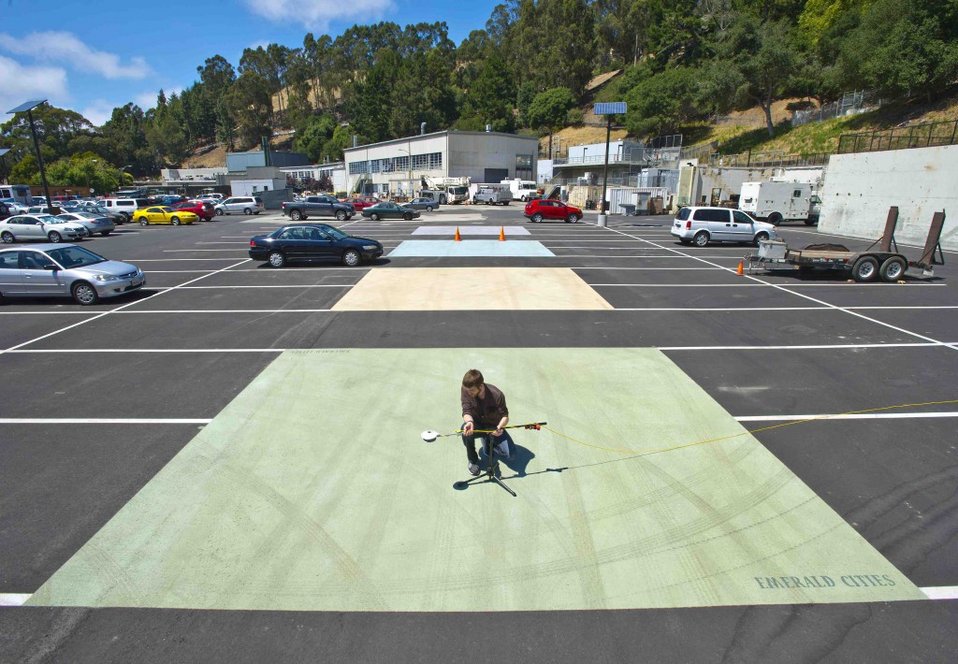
Lawrence Berkeley National Laboratory's Heat Island Group has converted a portion of a new temporary parking lot at Berkeley Lab into a cool pavement exhibit.